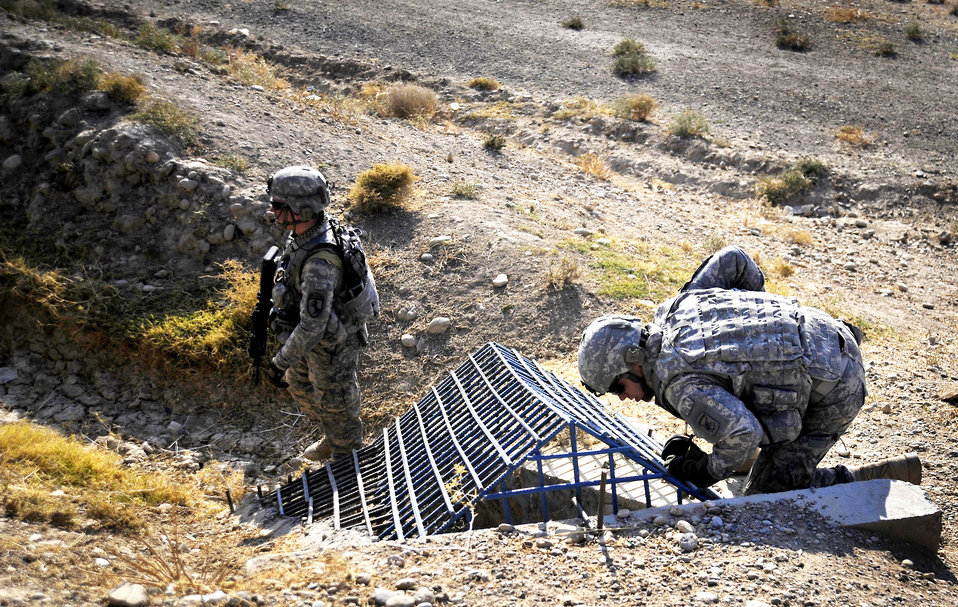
Air Force engineers help keep Afghan roads safe for travel

Army Sgt. William Brinkley stands guard while Capt. Rick Vermillion inspects a bridge for improvised explosives devices, damages or traces of tampering Oct. 23, 2009, in Zabul Province, Afghanistan. The inspections provide safety to the people of Zabul as well as coalition forces while traveling. Sergeant Brinkley is a security forces Soldier assigned to the Provincial Reconstruction Team Zabul, and Captain Vermilion is a PRT engineer.